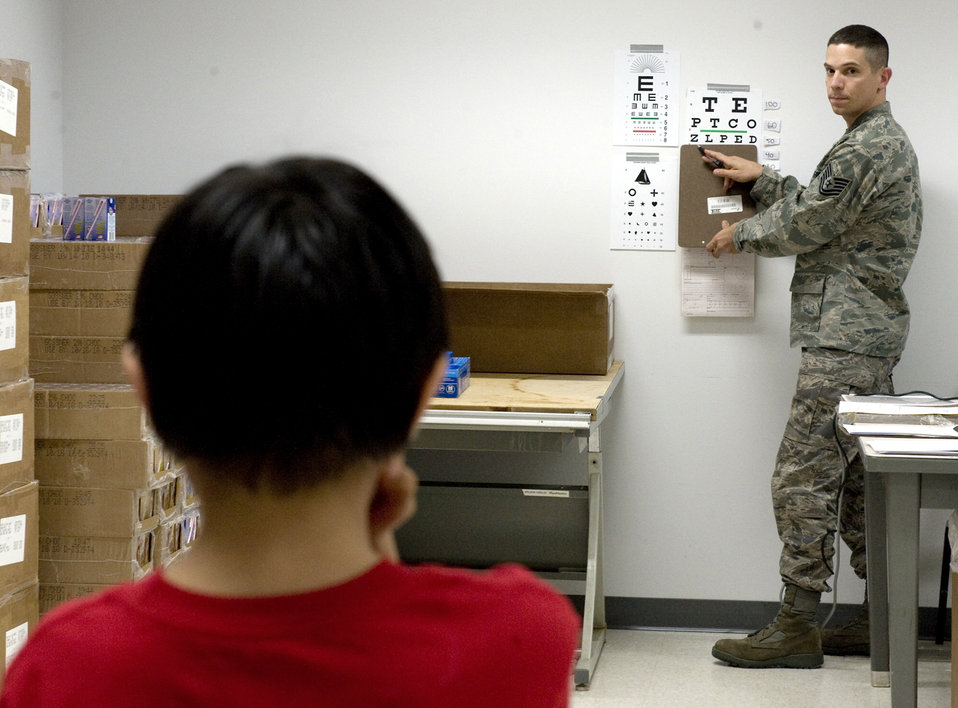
New Vision

Tech. Sgt David Hauser conducts an initial eye test for 8-year-old Jason Ferreira during Operation Artic Care April 12, 2010, in Kotzebue, Alaska. Sergeant Hauser is an ophthalmic technician assigned to the 920th Aero Medical Staging Squadron at Patrick Air Force Base, Fla.